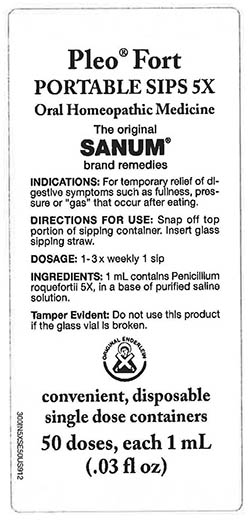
RECALLED – Homeopathic Drug Products

March 18, 2014 – Product Recall – Terra-Medica Issues Voluntary Nationwide Recall of Specified Lots of Pleo Homeopathic Drug Products Due to the Potential for Undeclared Penicillin.